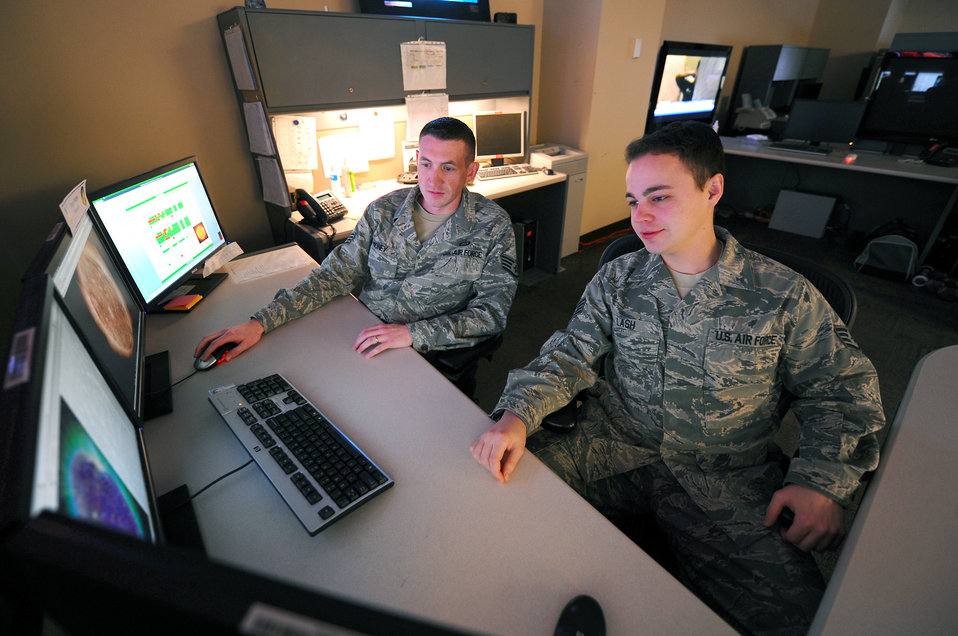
Space weather team readies for upcoming solar max

Staff Sgt. Matthew Money (left) and Staff Sgt. Jonathan Lash monitor the near earth space environment at the 2nd Weather Squadron space weather operations center located inside the Air Force Weather Agency at Offutt Air Force Base, Neb. The 2nd WS squadron's worldwide space weather team of roughly 50 active-duty members, civilians and contractors continually analyze, forecast and provide alert notifications for the entire Department of Defense as well as a whole host of other government agencies. Sergeants Money and Lash are forecasters with the 2nd WS space weather flight.